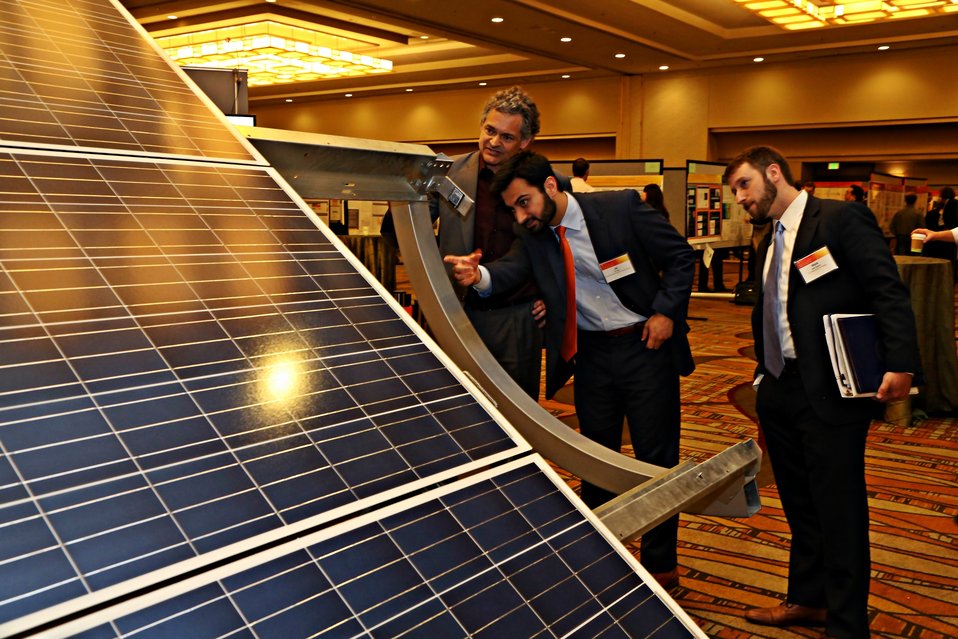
VIP Walkthough 3

Ali Zaidi, Deputy Director for Energy Policy, The White House Domestic Policy Council checking out the demos in the tech forum.